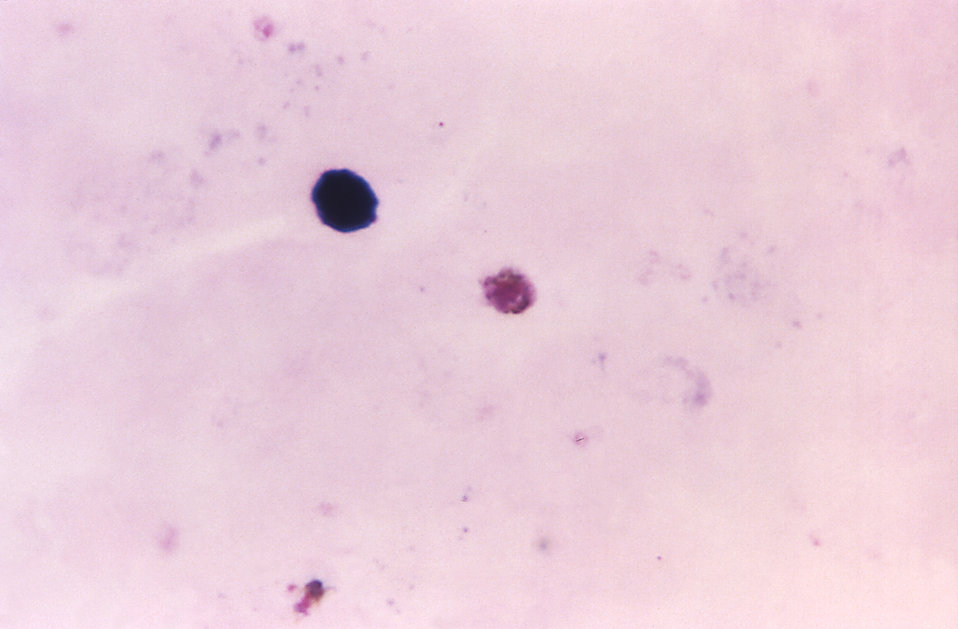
This thick film photomicrograph depicts a Plasmodium malariae gametocyte, using Giemsa stain technique.